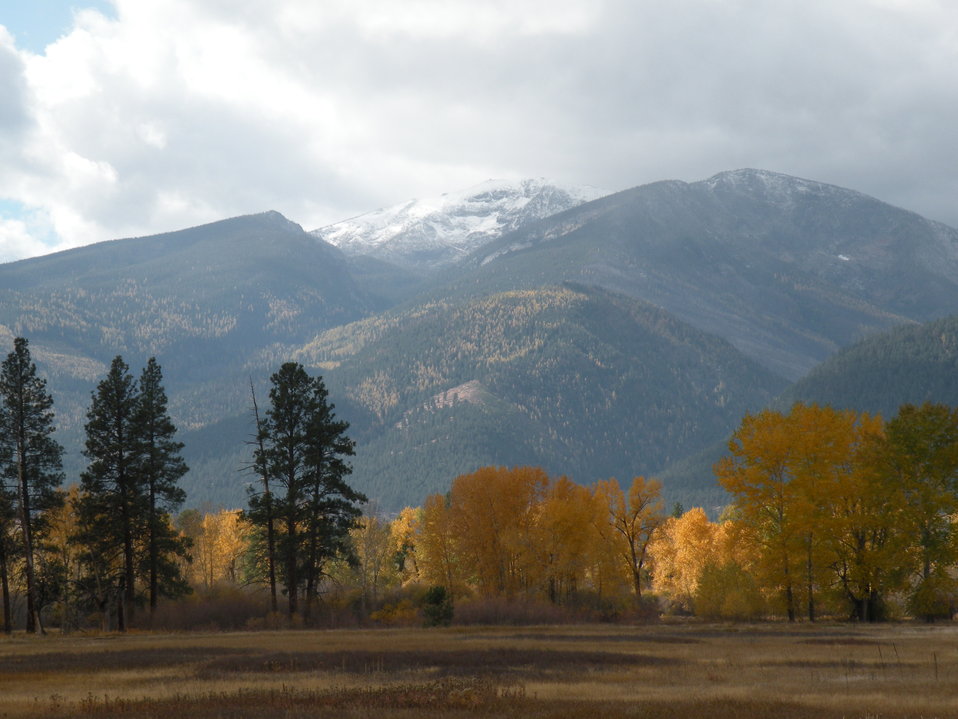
St Marys Peak Seen From Refuge

Larch (mountainside) and Cottonwood (foreground) changing to fall colors at Lee Metcalf National Wildlife Refuge.